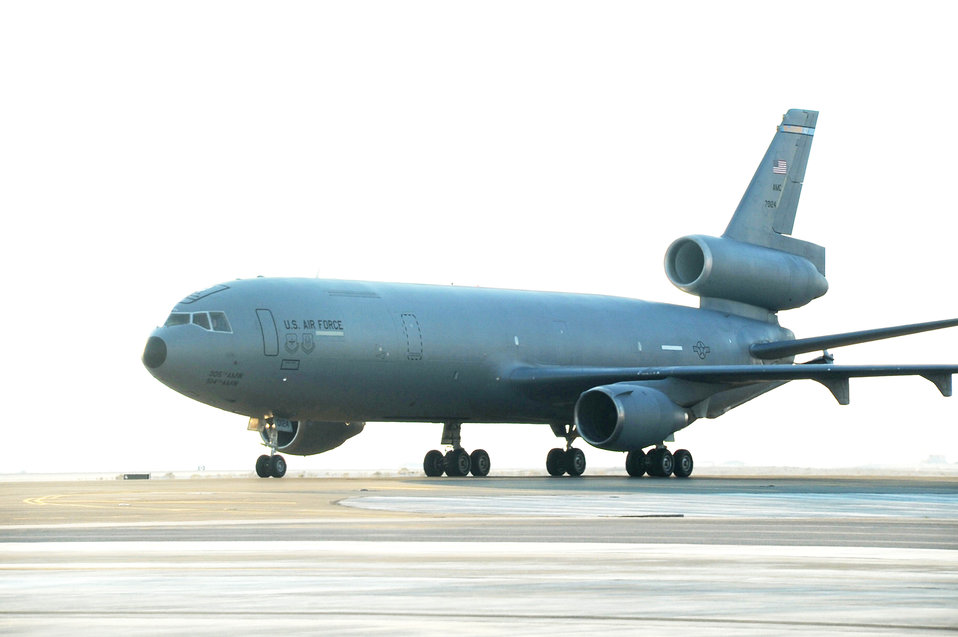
KC-10s keep aircraft flying in Southwest Asia

A KC-10 Extender comes in for a landing at an air base in Southwest Asia Jan. 6, 2010, after completing a combat air refueling mission. This KC-10 is assigned to the 908th Expeditionary Air Refueling Squadron of the 380th Air Expeditionary Wing.